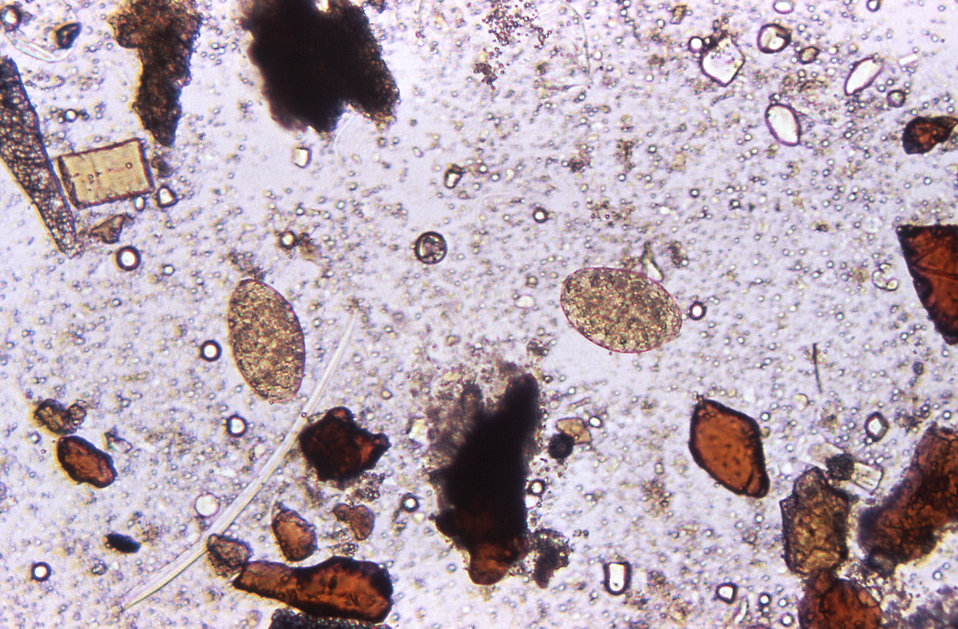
Under a magnification of 125X, this unstained formalin fixed fecal specimen mount revealed the presence of eggs of the parasite from the genus Echinostoma.